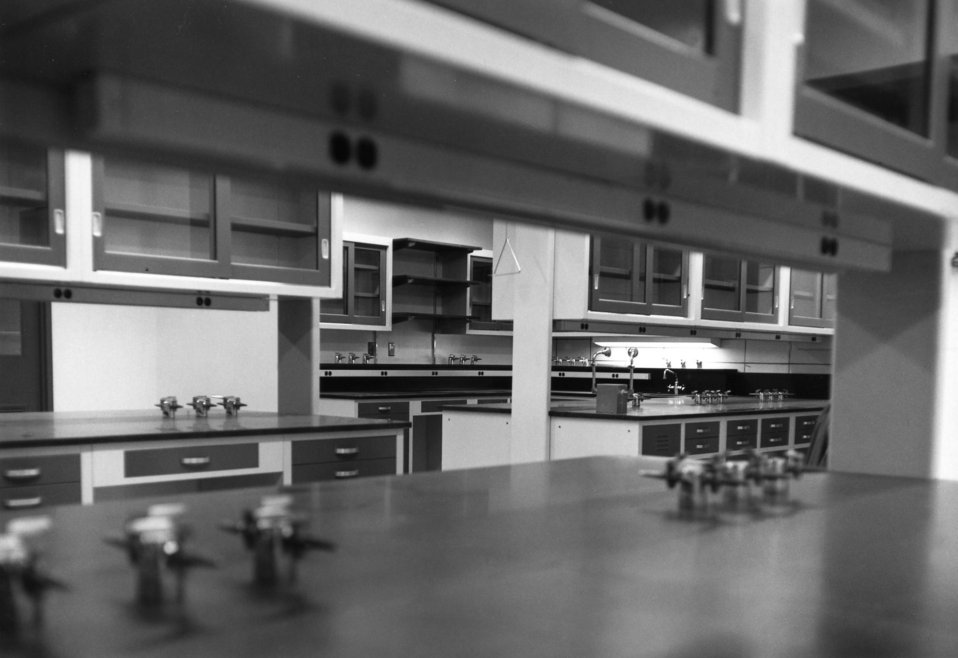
This photograph, taken in the mid 1980s, depicted the interior of what at that time was the newest Centers for Disease Control virology laboratory located on the organization's Clifton Road, Roybal Campus in Atlanta, Georgia.